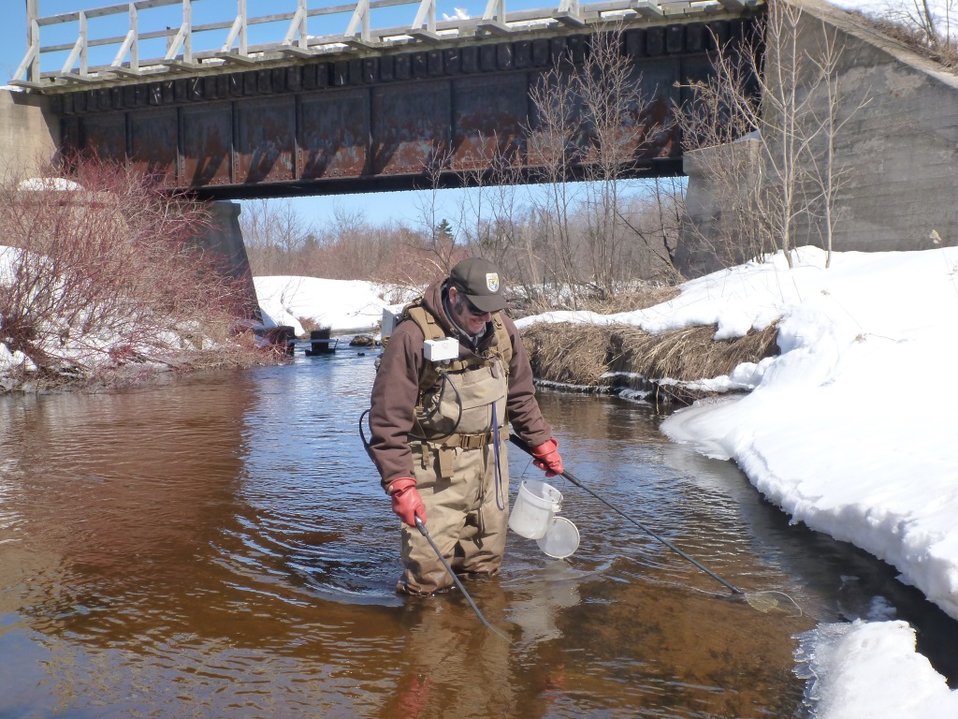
Matt Symbal electrofishing the Rock River, Alger County MI.